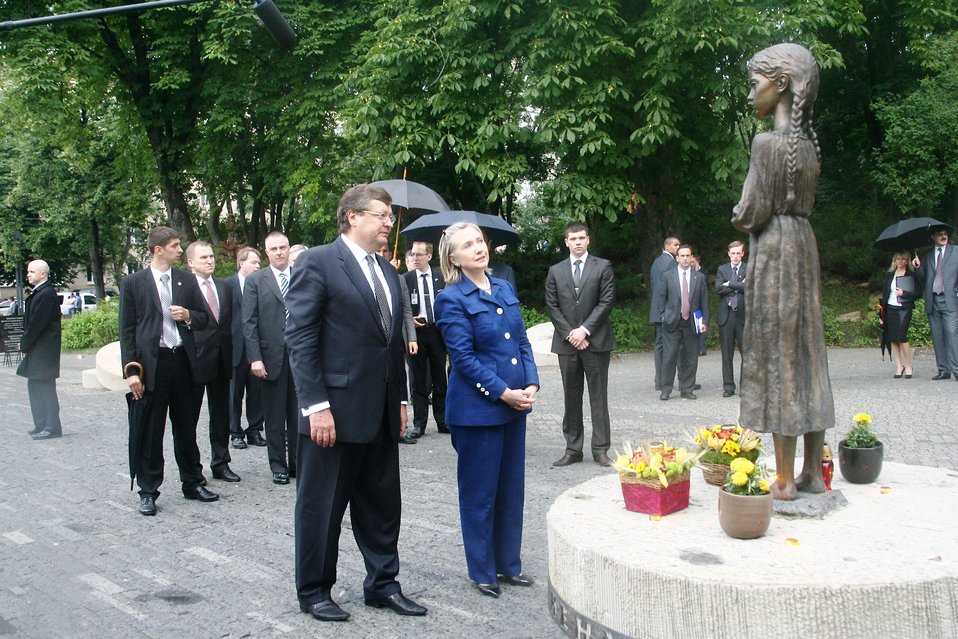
Secretary Clinton and Ukrainian Foreign Minister Place Flowers at Holodomor Memorial

U.S. Secretary of State Hillary Rodham Clinton and Ukrainian Foreign Minister Kostyantyn Gryshchenko place flowers at the Holodomor Memorial in Kyiv, Ukraine, on July 2, 2010.